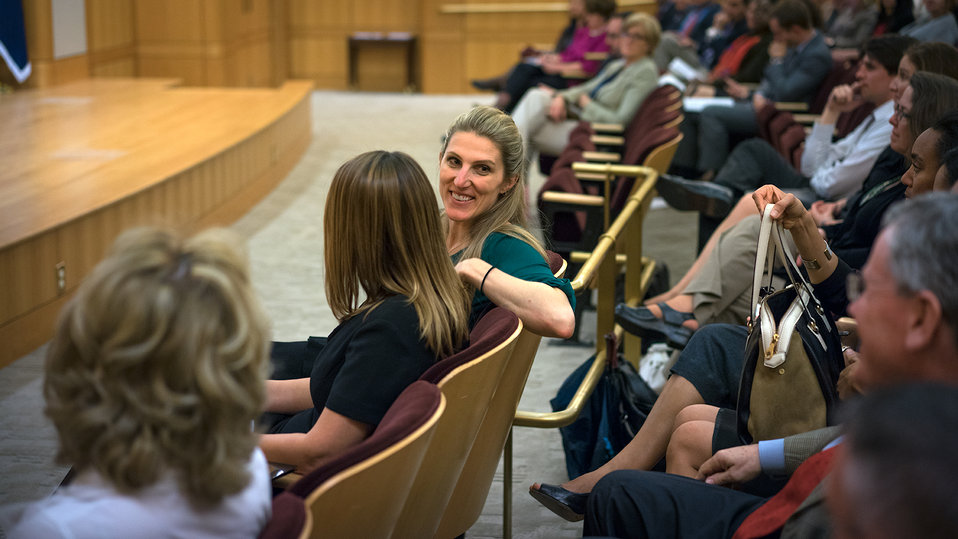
Dr. Vanessa Kerry Smiles Back at her Father, Secretary Kerry

Dr. Vanessa Kerry, Co-Founder and Chief Executive Officer of Seed Global Health, smiles back at her father, U.S. Secretary of State John Kerry, who came to watch Dr. Kerry speak on 'Improving Developing Country Health Systems through the Spirit of Volunteerism,' part of the Secretary’s Office of Global Health Diplomacy (S/GHD) Speaker Series, at the U.S. Department of State in Washington, D.C., on April 22, 2014.